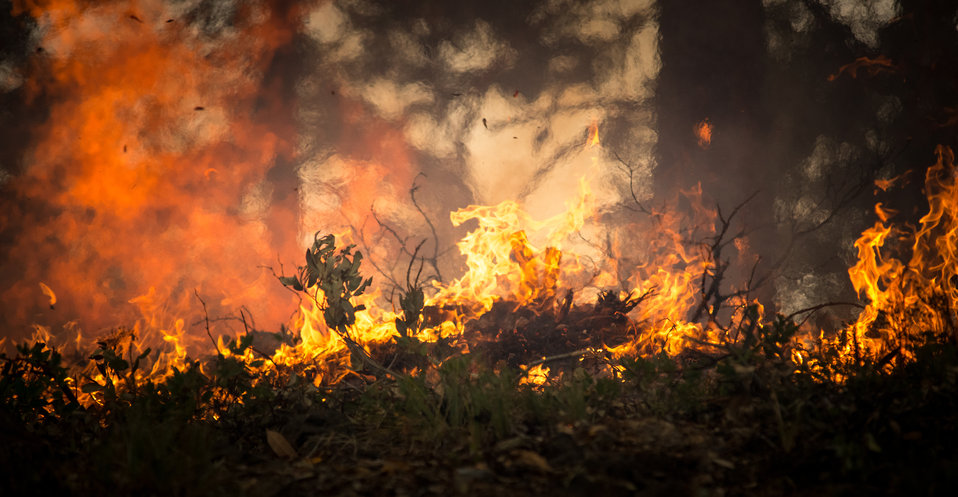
Geronimo Interagency Hotshot Crew, Department of the Interior (DOI) Indian Affairs (IA) Bureau of Indian Affairs (BIA) San Carlos Agency in Arizona; on assignment at the Big Windy Complex Wildlands Fire, approximately 15 miles west of Interstate-5 and East Northeast of Galice, Oregon, conducts a prescribed burn 'burnout' operation to help stop the main fire that may head toward this roadway, on Friday, Aug 9, 2013. The primary mission of the Interagency Hotshot Crews (IHC) is to provide a safe, organized, mobile and highly skilled hand crew for all phases of wildland fire suppression. The arduous duties and specialized assignments required of IHC personnel require uniform staffing, certification, training, equipment, communications, transportation, organization, and qualifications that adhere to interagency standards and guidelines.